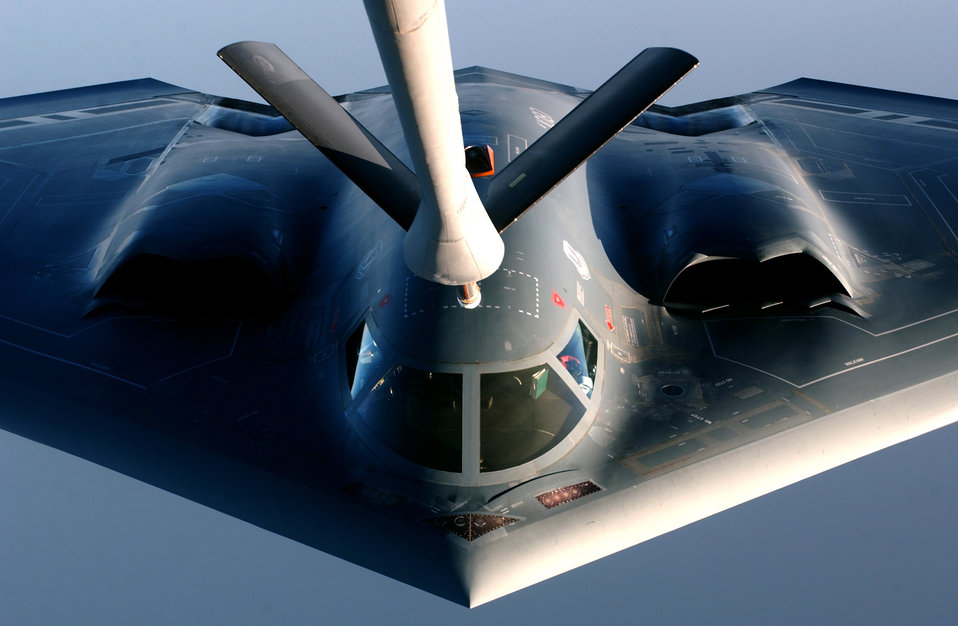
Topping off

OPERATION IRAQI FREEDOM -- A B-2 Spirit, returning from a mission over Iraq, takes on fuel from a KC-135 Stratotanker over the Indian Ocean on March 27.